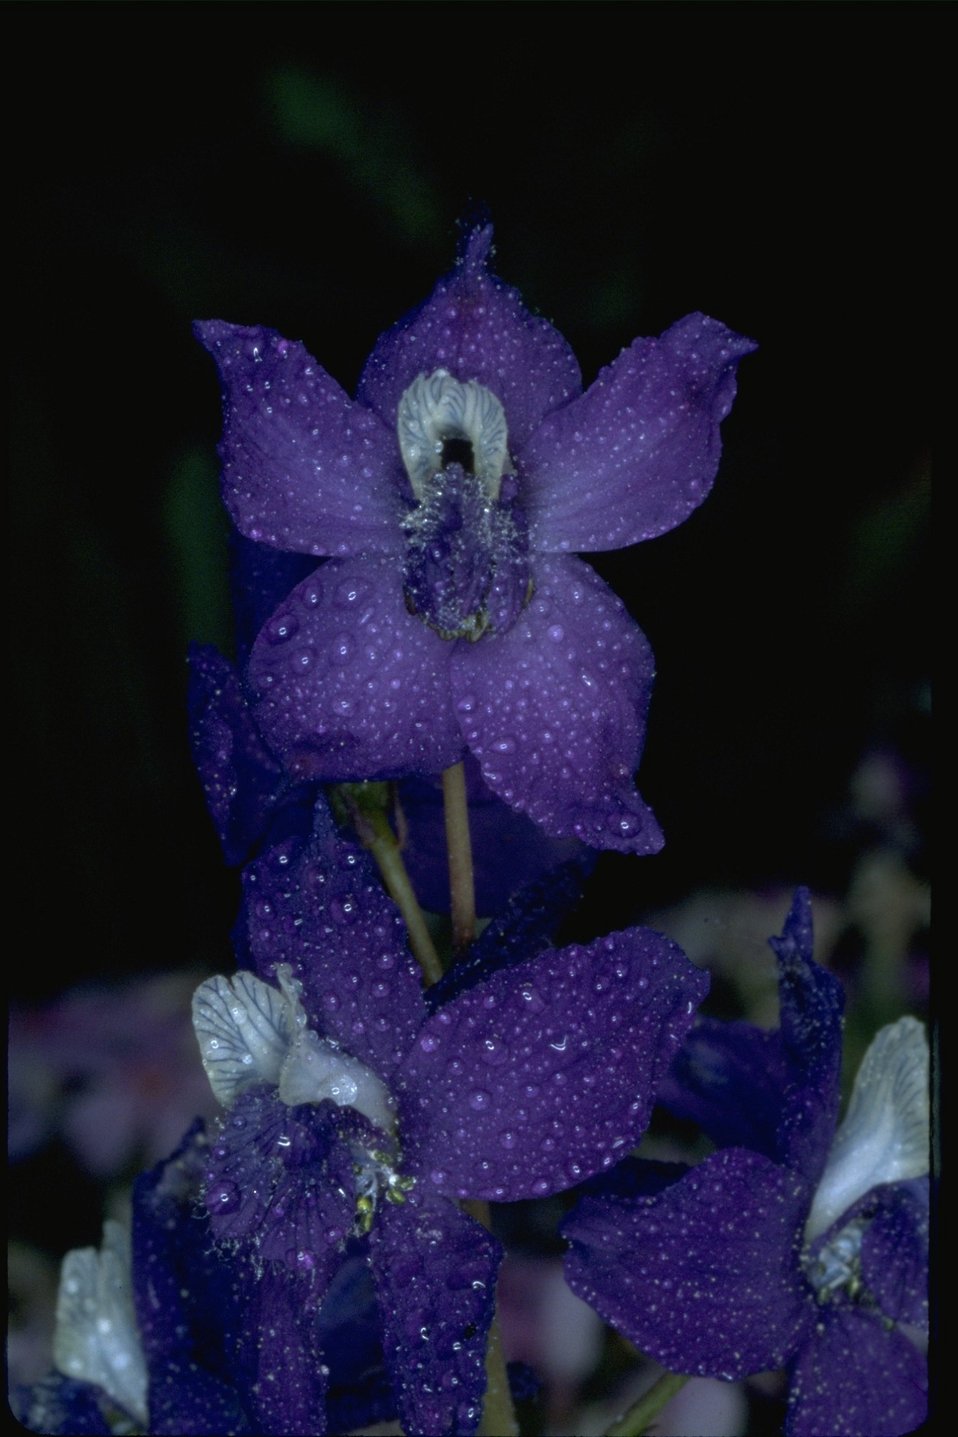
Close up shot of delphinium/Larkspur with dew.